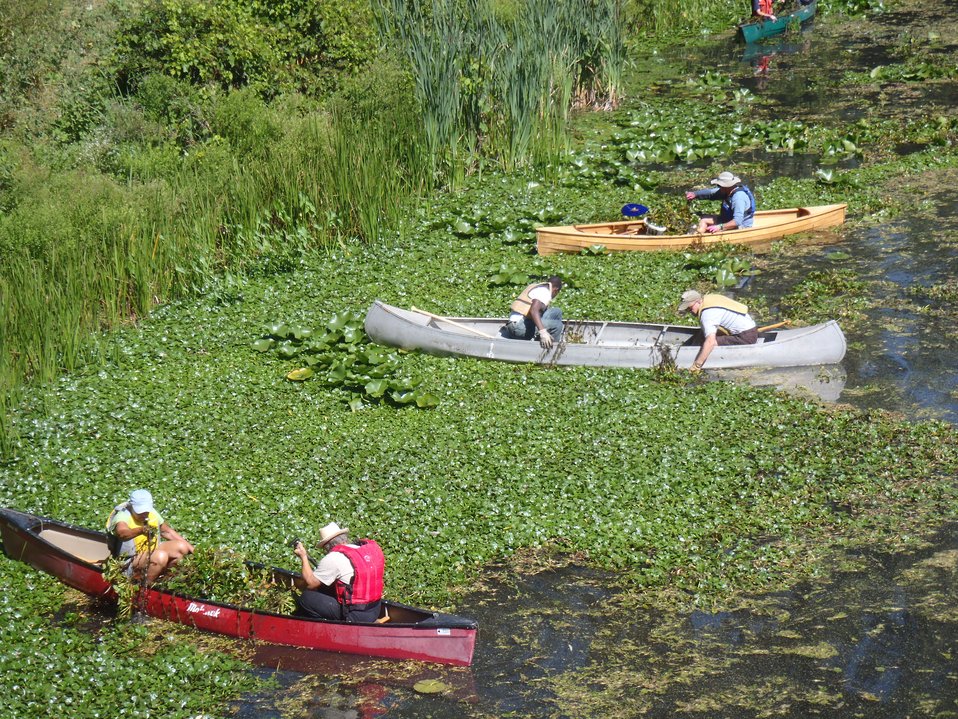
Water Chestnut Volunteers

In 2010, over 50 volunteers with the Buffalo Niagara Riverkeepers came out in one day to Ellicott Creek Park to remove nearshore water chestnut plants inaccessible to mechanical harvesting. Their efforts provided a real 'finished look' to the waterway! Since this area is entirely within a popular county park, both there was both an aesthetic and recreational importance to removing invasive water chestnut.